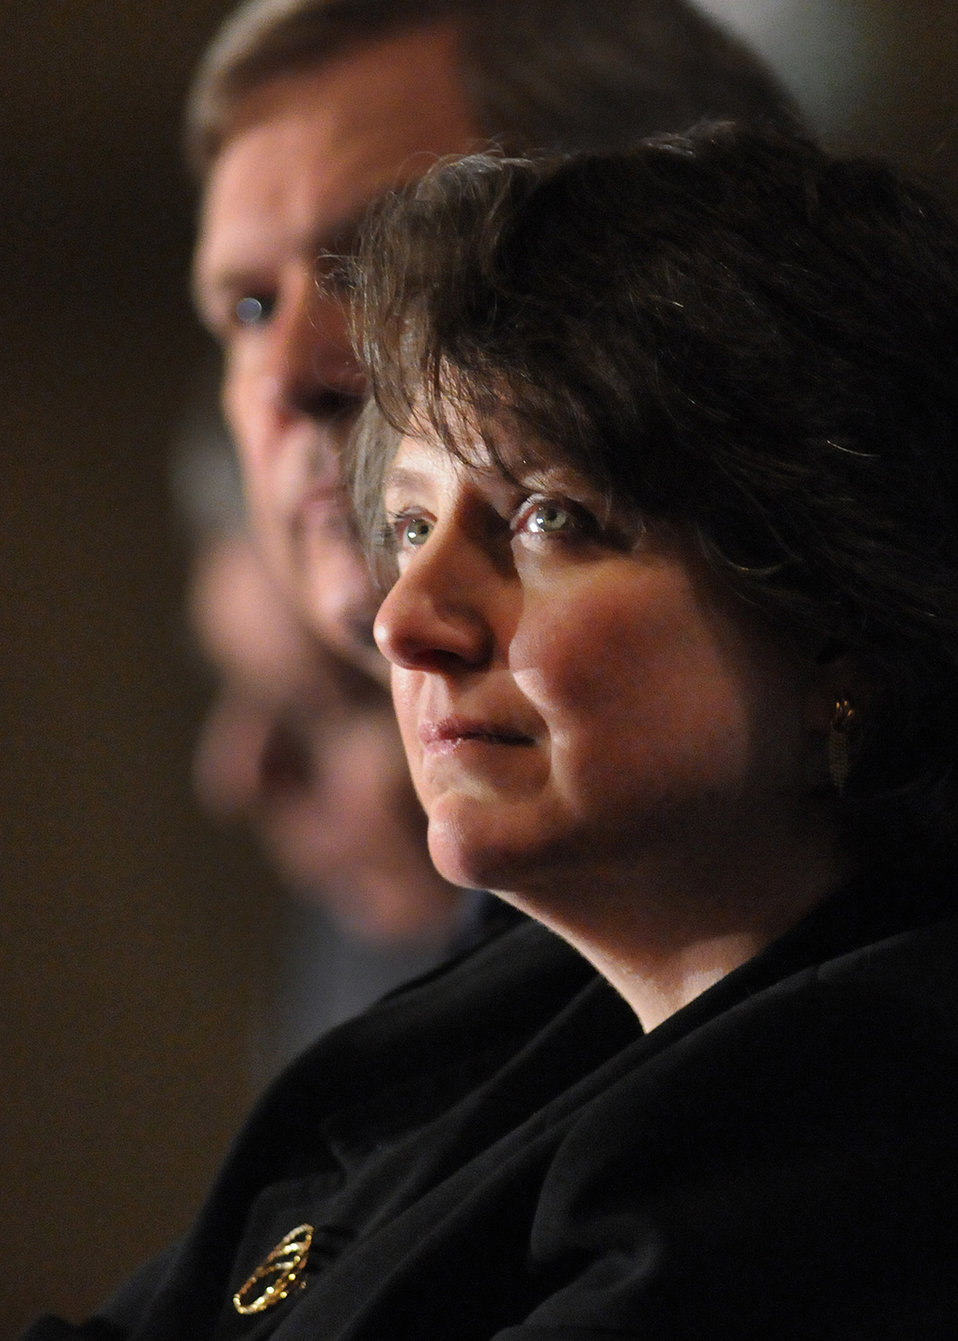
Deputy Agriculture Secretary Kathleen Merrigan listens to former President Bill Clinton's address to the World Agriculture Outlook Board Forum held in Arlington, VA, on Thursday, February 24, 2011.